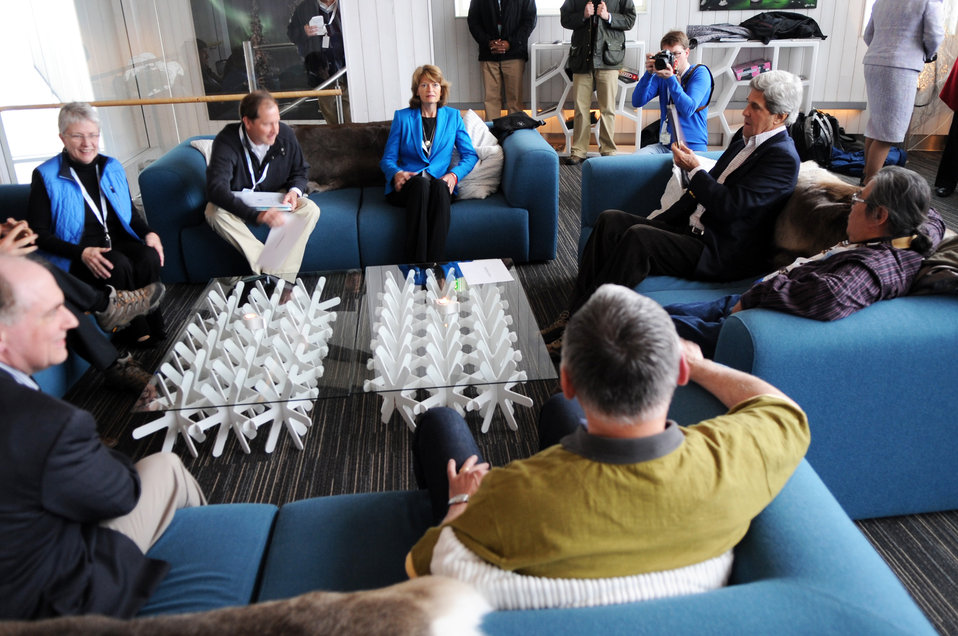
Secretary Kerry Meets With Alaskan Permanent Participants to the Arctic Council

U.S. Secretary of State John Kerry and U.S. Senator Lisa Murkowski of Alaska meet with Alaskan Permanent Participants to the Arctic Council in Kiruna, Sweden, on May 14, 2013.